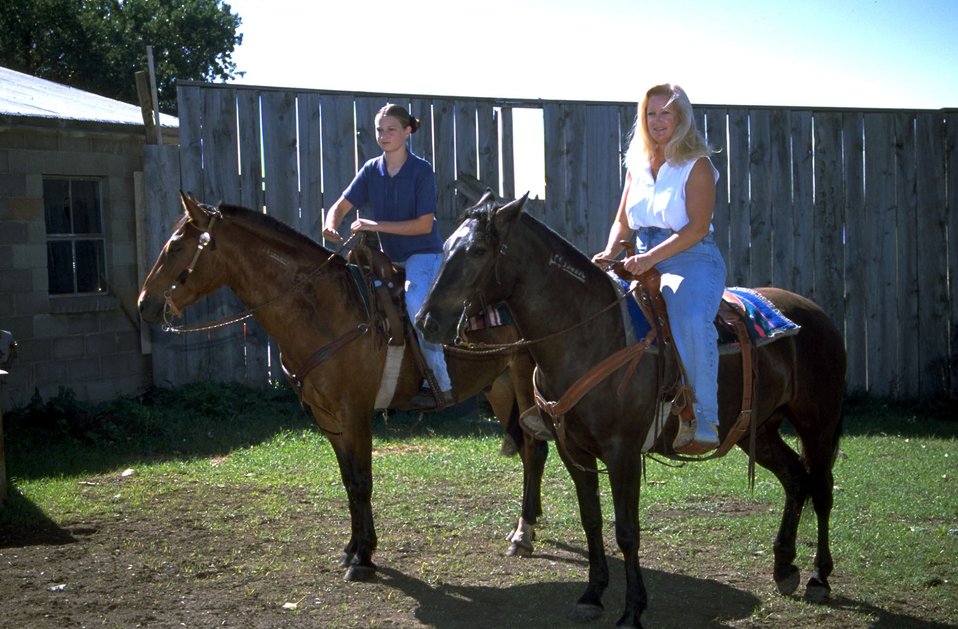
Adopted Horses